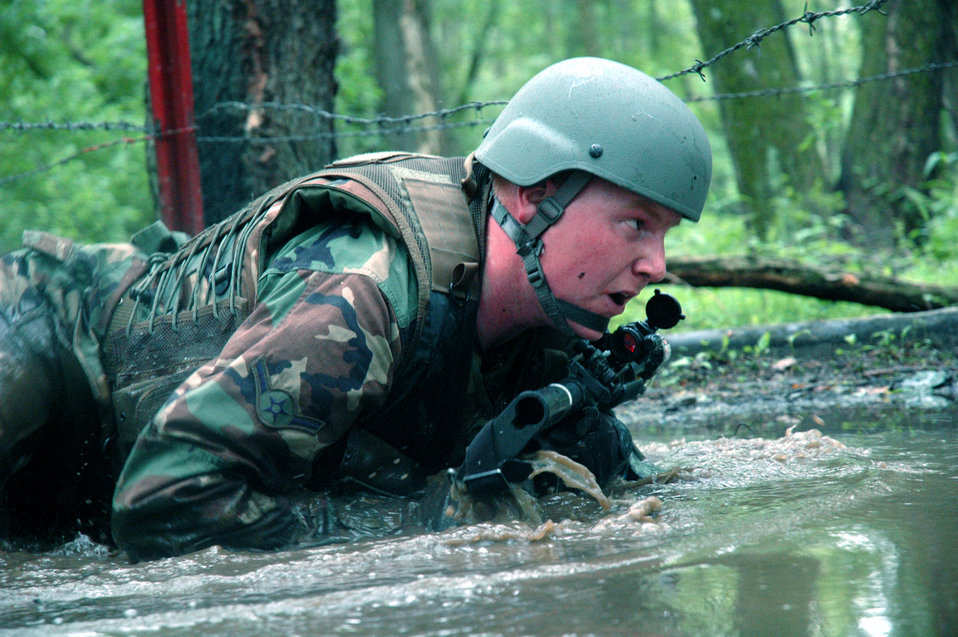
U.S. Air Force Expeditionary Center: Phoenix Warrior Training Course

A student in the Air Force Phoenix Warrior Training Course crawls under barbed wire and through water during combat first aid class training June 5 at Fort Dix, N.J. The course is taught by members of Air Force Expeditionary Center's Expeditionary Operations School and 421st Combat Training Squadron and prepares Airmen for upcoming deployments. Annually, the course trains more than 23,000 students in expeditionary- and mobility air force-based courses both with in-residence and distance learning. (U.S. Air Force photo/Tech. Sgt. Scott T. Sturkol) Annually, the USAF EC trains more than 23,000 students in expeditionary- and mobility air force-based courses both with in-residence and distance learning.